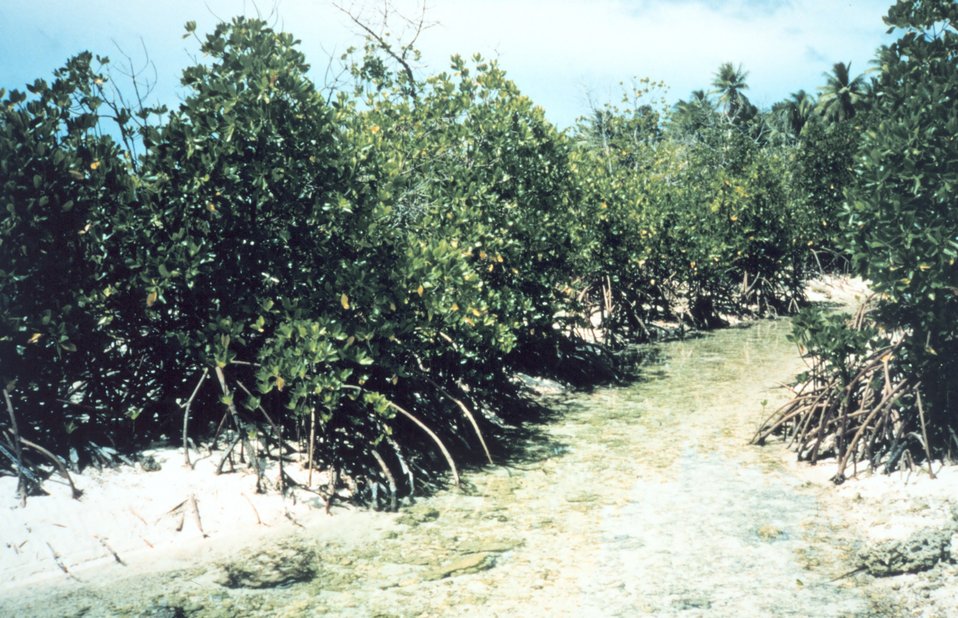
Mangroves along a tidal stream